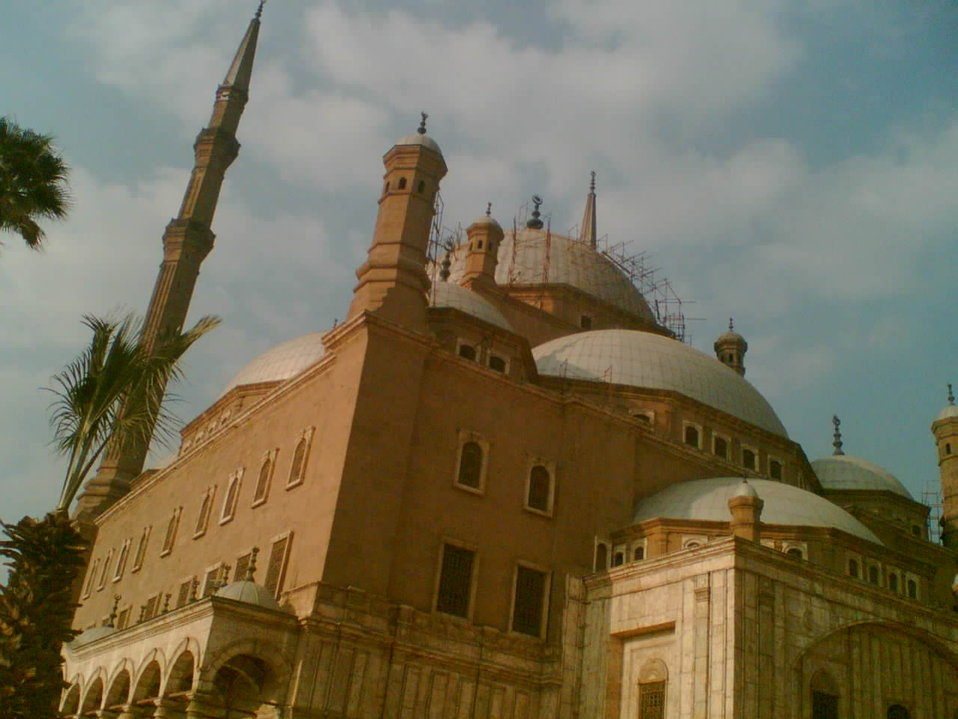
Mosque of Muhammad Ali inside Salah El-Din Citadel in Cairo-Egypt